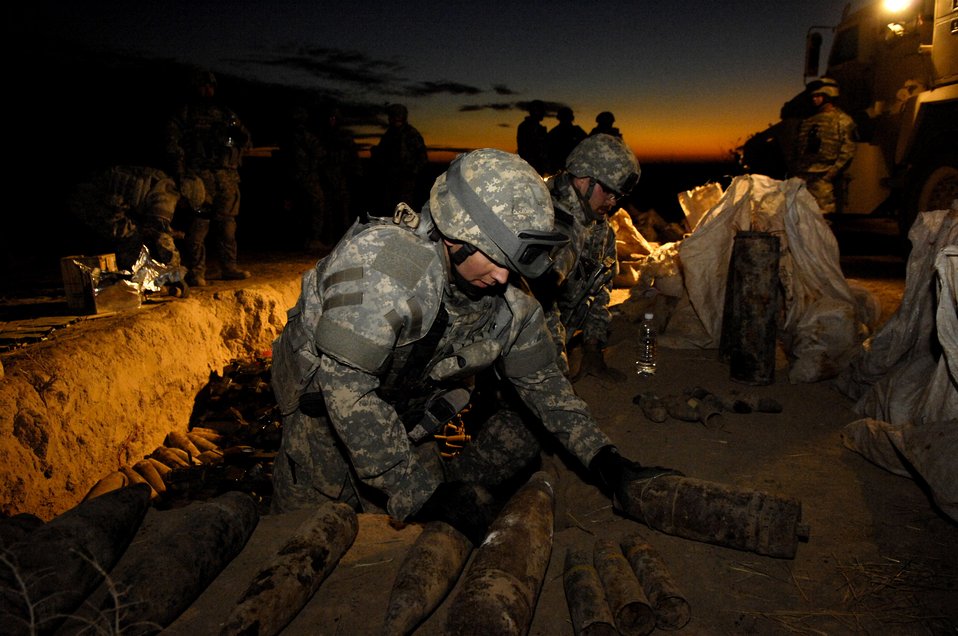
Getting ready for a big bang

Senior Airman Justin Mecias, with 506th Expeditionary Civil Engineer Squadron's explosive ordnance disposal team, gets ready to destroy captured ordnance Dec. 18 found in Ruwaydah Village, Iraq. The ordnance is destroyed to prevent it from being used against coalition troops.